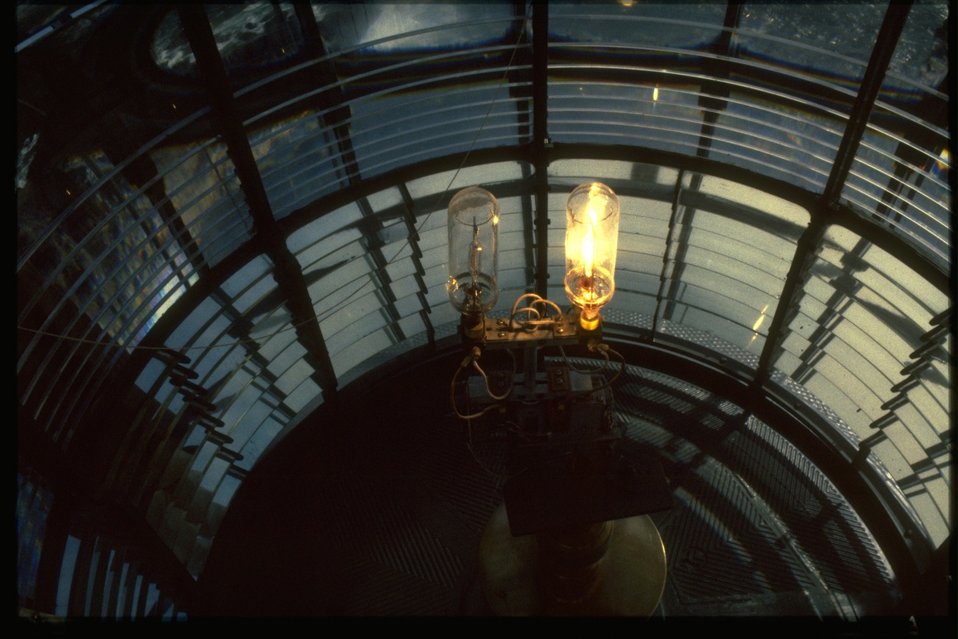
The light bulb (1000 watt lens) on the interior of the Yaquina Head lighthouse.